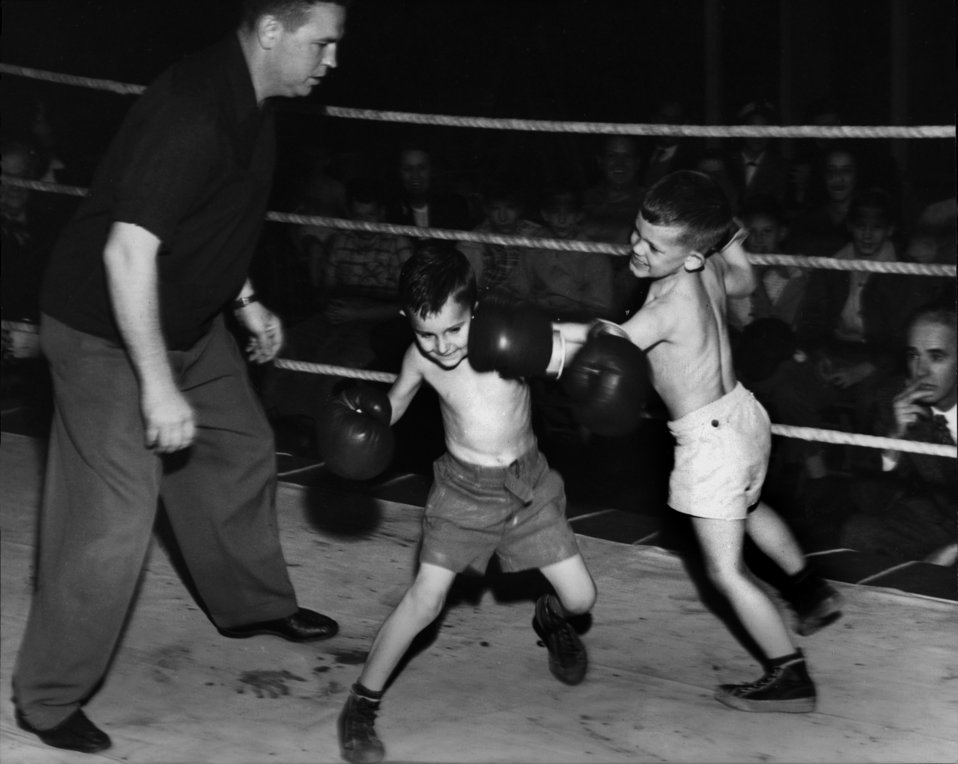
Small Boys Boxing Oak Ridge

3211-10 DOE photo by Ed Westcott Small Boys Boxing Oak Ridge Tennessee 11-23-1946